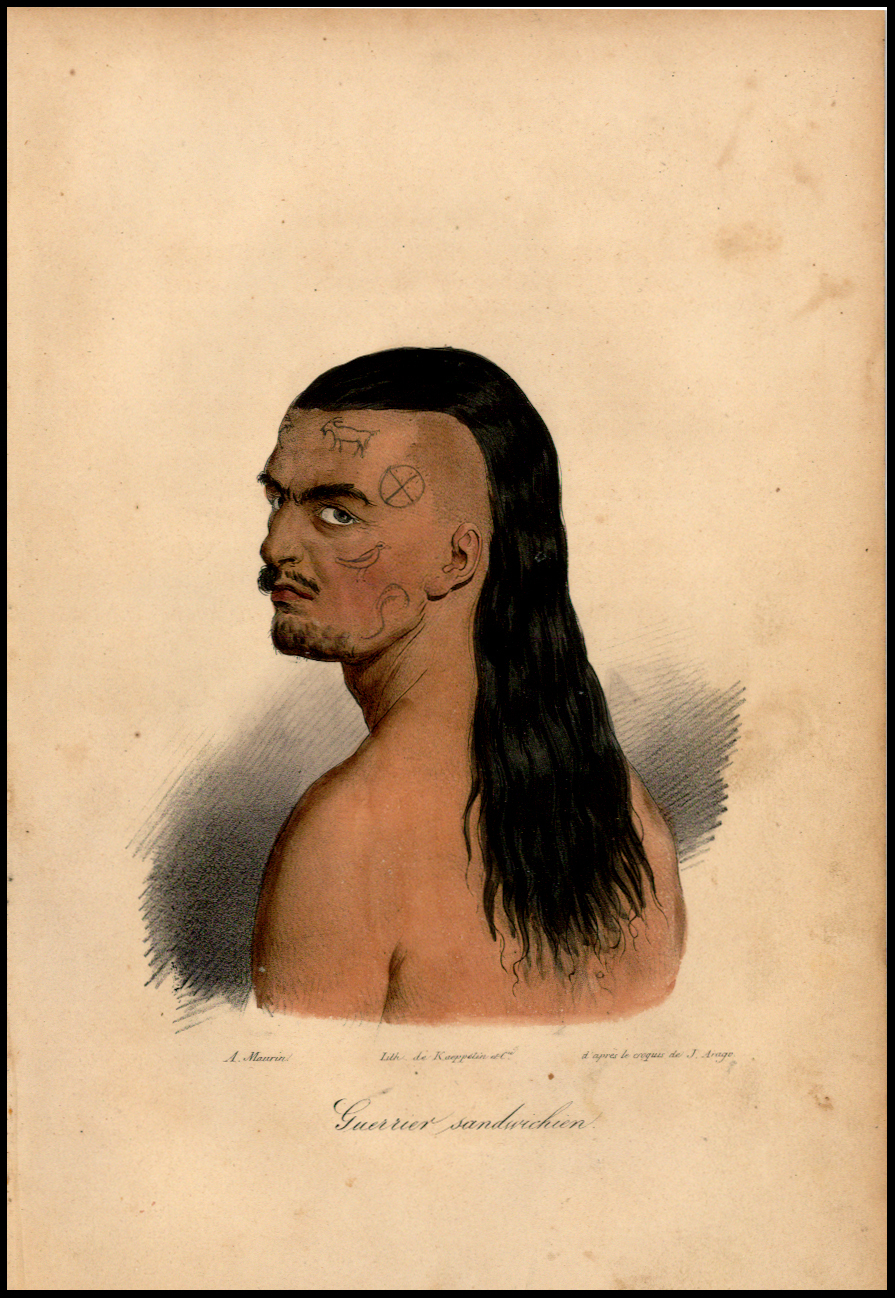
Arago – Guerrier Sandwichien